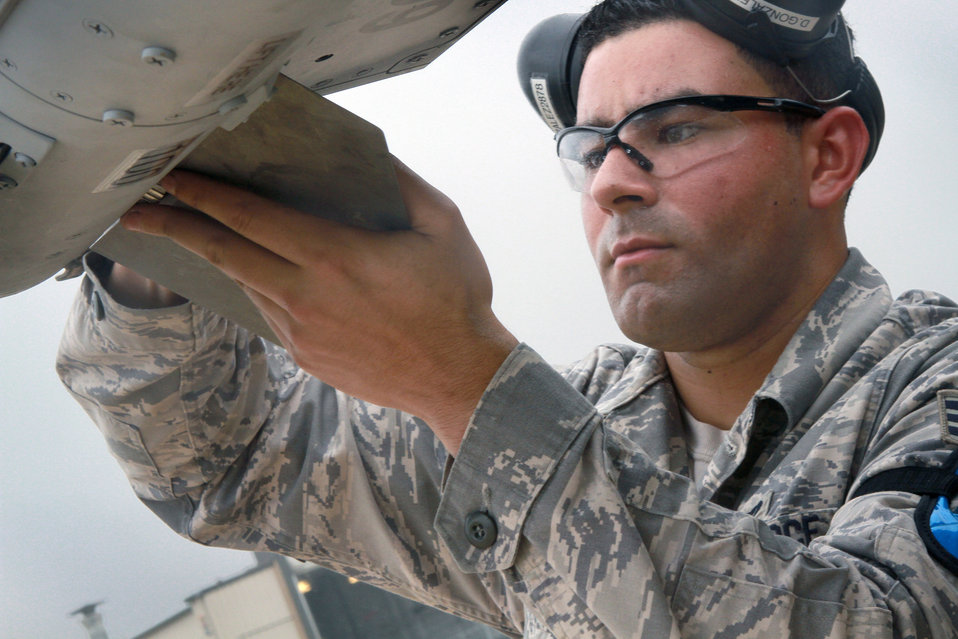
Weapons-loader competition

Senior Airman Daniel E. Gonzalez, Weapons Loader with the 177th Fighter Wing, New Jersey Air National Guard, installs a fin on an AIM-120 advanced medium-range air-to-air missile (AMRAAM) during the annual Load Crew competition on June 12, 2011. This is the 30th year the Wing has held the competition.